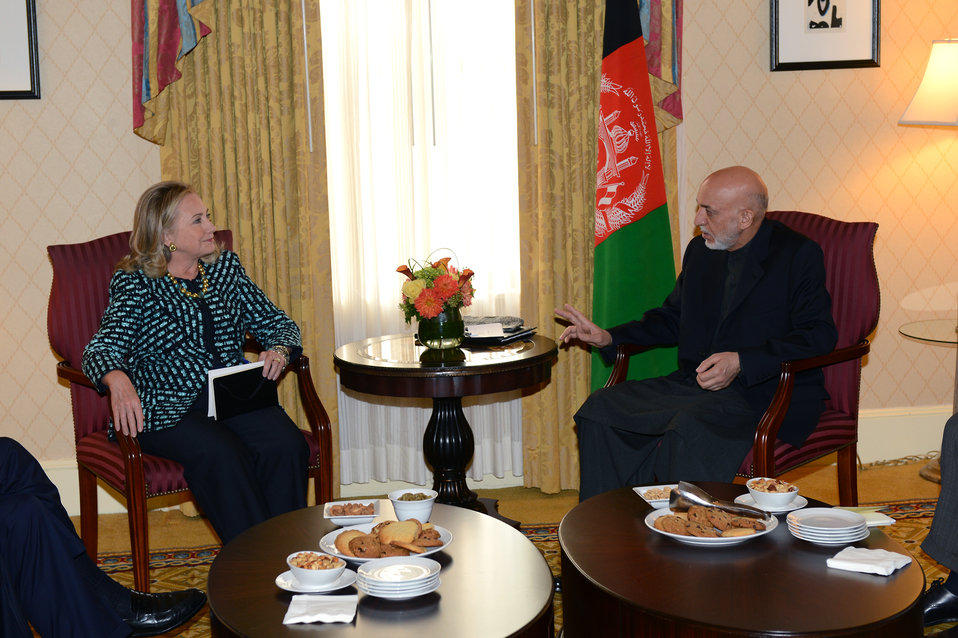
Secretary Clinton Meets With Afghan President Karzai

U.S. Secretary of State Hillary Rodham Clinton meets with Afghan President Hamid Karzai in New York, New York on September 24, 2012.